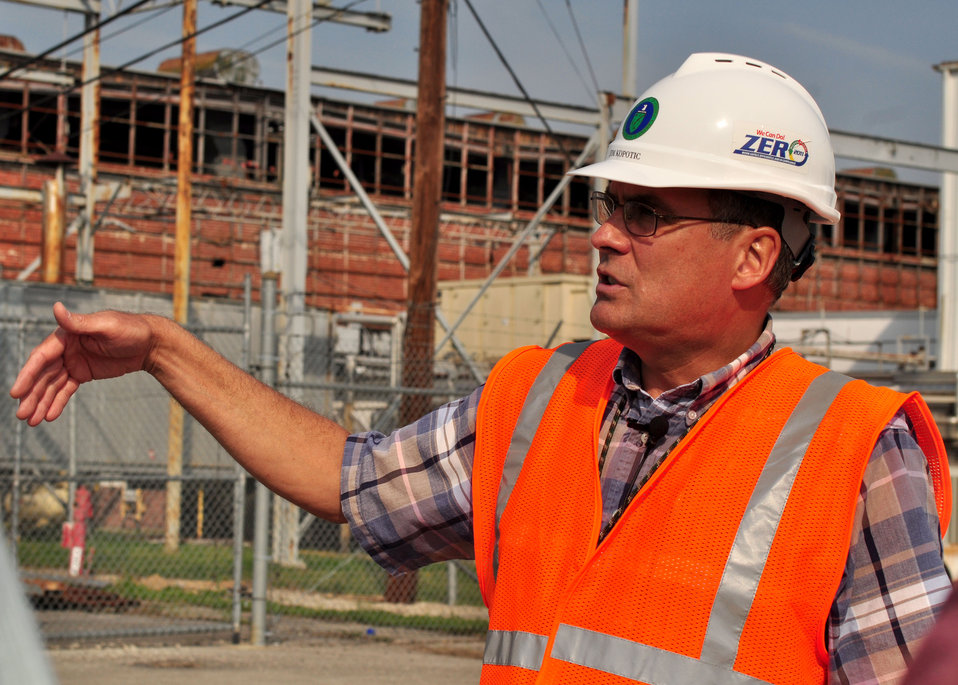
Jim Kopotic Federal Project Director

12-059-49 DOE photo by Lynn Freeny

Jim Kopotic Federal Project Director
ETTP Site Manager at the K-25 D&D site Oak Ridge Tennessee 3/21/2012